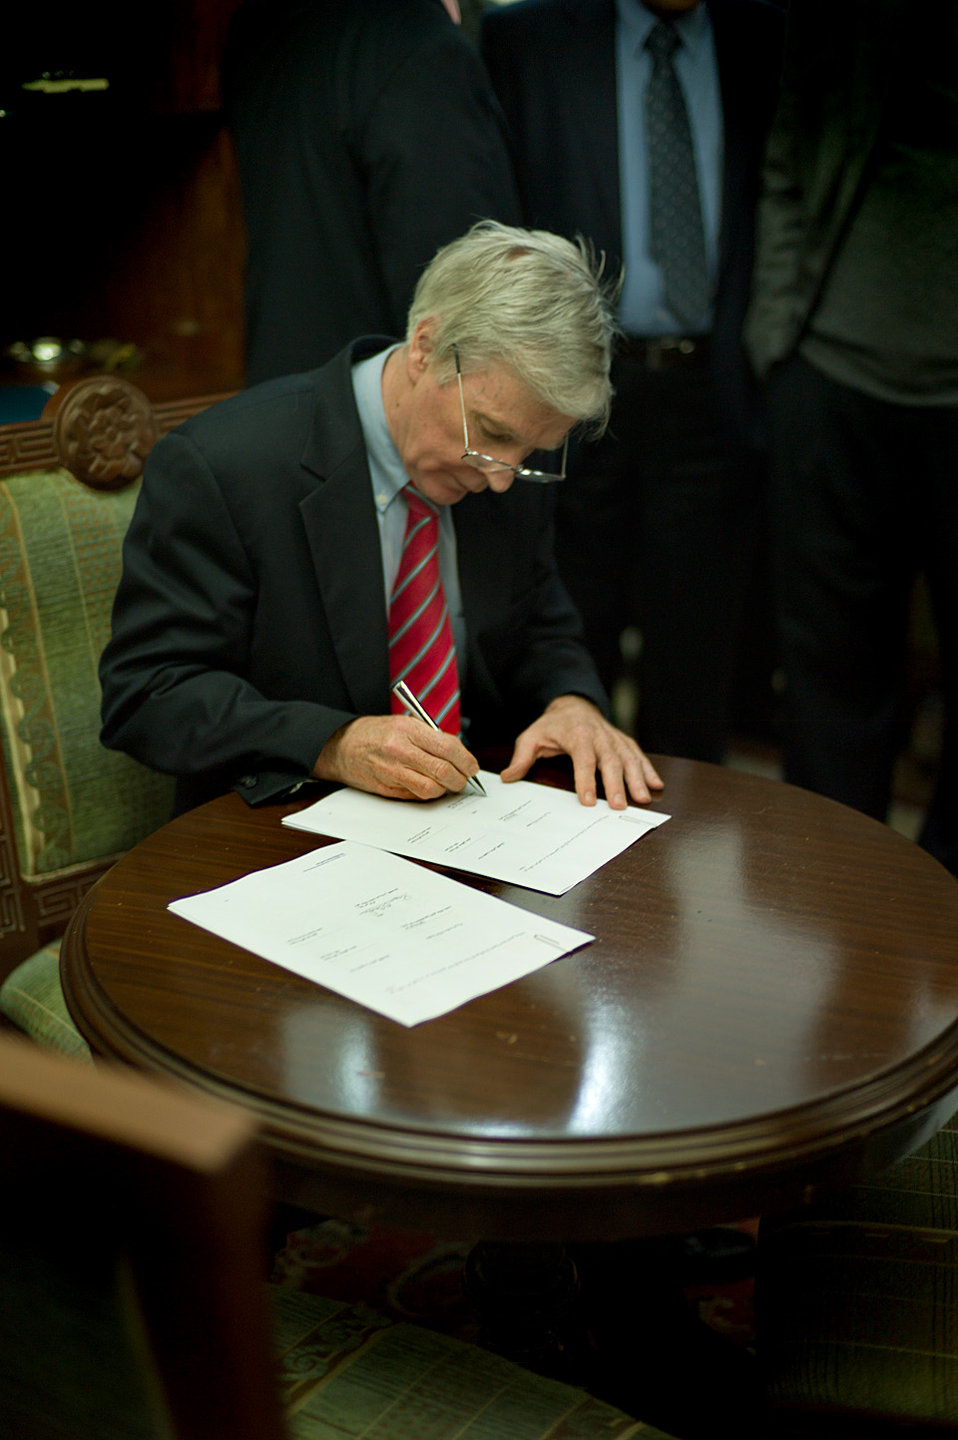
Ambassador Crocker Signing